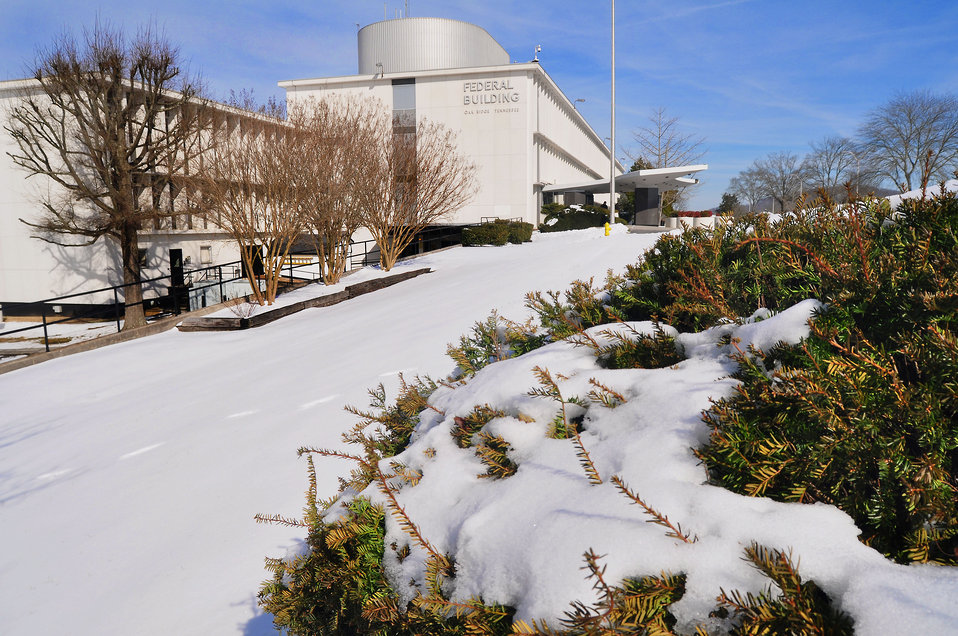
Federal Building in Snow Oak Ridge 2010

10-015 DOE photo Lynn Freeny 1-29-2010 Oak Ridge Tennessee